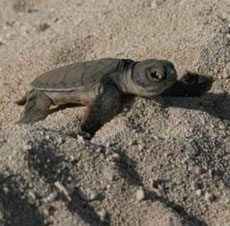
Green Turtle Hatchling - Hawaiian Islands NWR

Approximately 90% of endangered green turtles are found on the beaches of the Hawaiian Islands NWR, which encompasses most of the Northwest Hawaiian Islands.